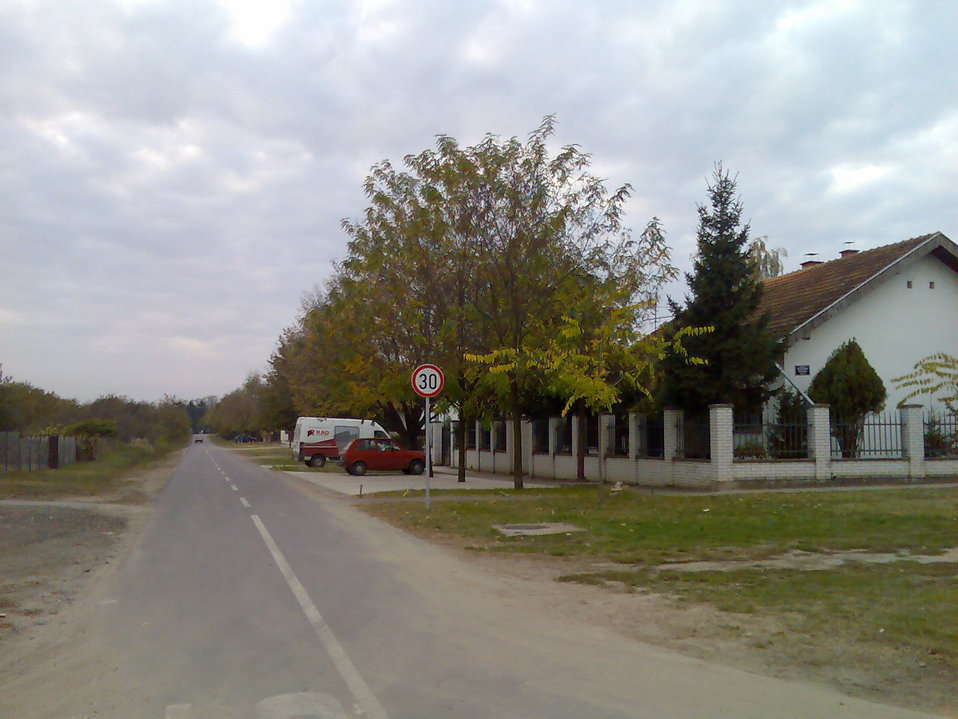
Српски / srpski: Radanovac Vocarska ulica Autor: Josip FLEIS, Izvor: Sopstvena fotografija